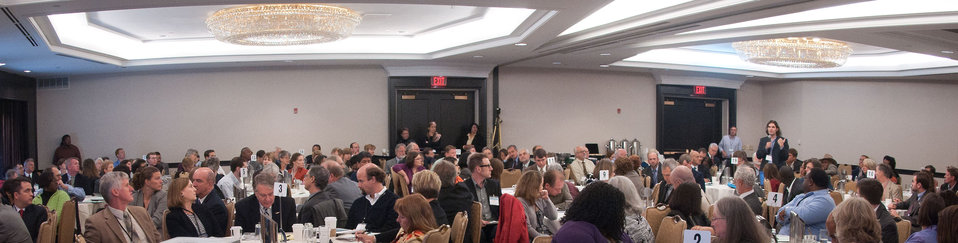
A participant (standing r.) asks U.S. Department of Agriculture (USDA) Secretary Tom Vilsack a question about minority opportunities, during the Rural Wealth Creation and Livelihoods national conference for practitioners, researchers and policymakers, held at the Dupont Hotel, Washington DC, on Monday October 3, 2011. USDA partnered with the Ford Foundation to sponsor the conference.